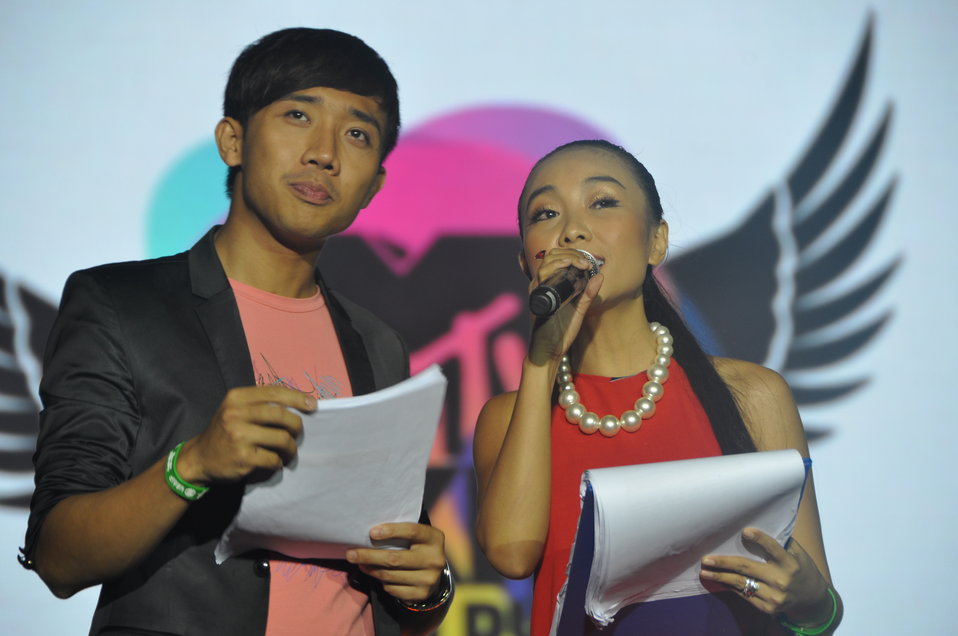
USAID co-sponors MTV EXIT concert in Hanoi against human trafficking

USAID co-sponsors MTV EXIT concert, campaign against human trafficking